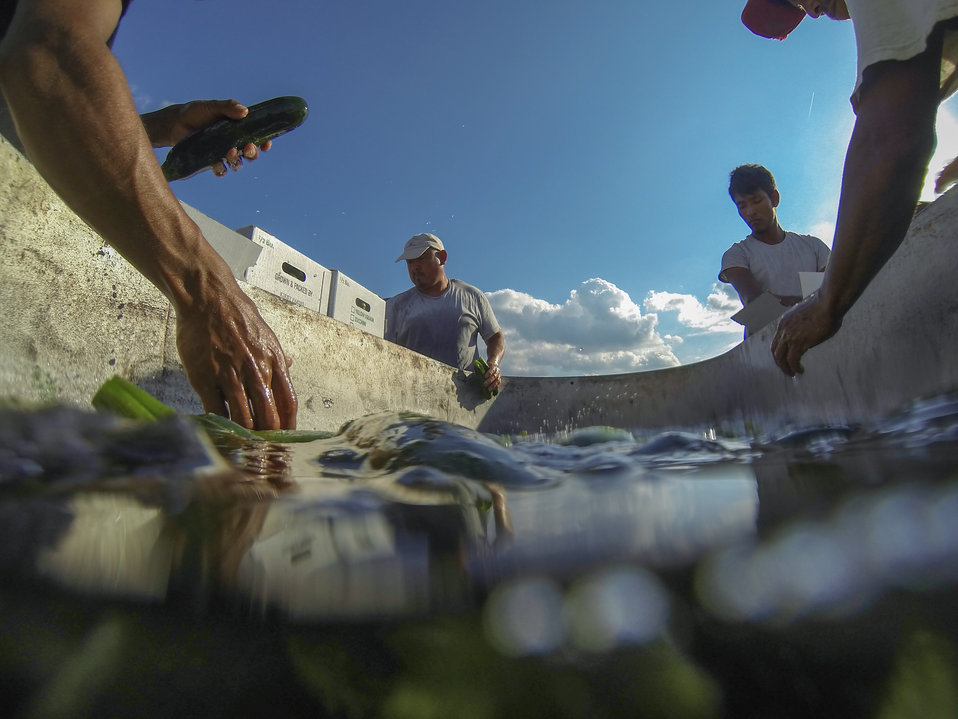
Migrant workers rinse and pack just-picked yellow squash on a processing trailer, at Kirby Farms in Mechanicsville, VA on Friday, Sept. 20, 2013. Kirby Farms devotes 200 acres of the farm to eggplant, spinach, beets, tomato, jalapeno peppers, melons and a variety of greens. Soybeans and small grain are grown on the remaining 300 acres. The fertile Virginia soil and their management practices, allows Kirby Farms to double and triple crop fields with rotational crop selection. Wholesalers, who buy from this farm, sell the produce to major supermarkets in the Mid-Atlantic region, from North Carolina to Maryland. Restaurants in the local area prepare and serve their harvest to patrons in the Greater Richmond, VA Region.